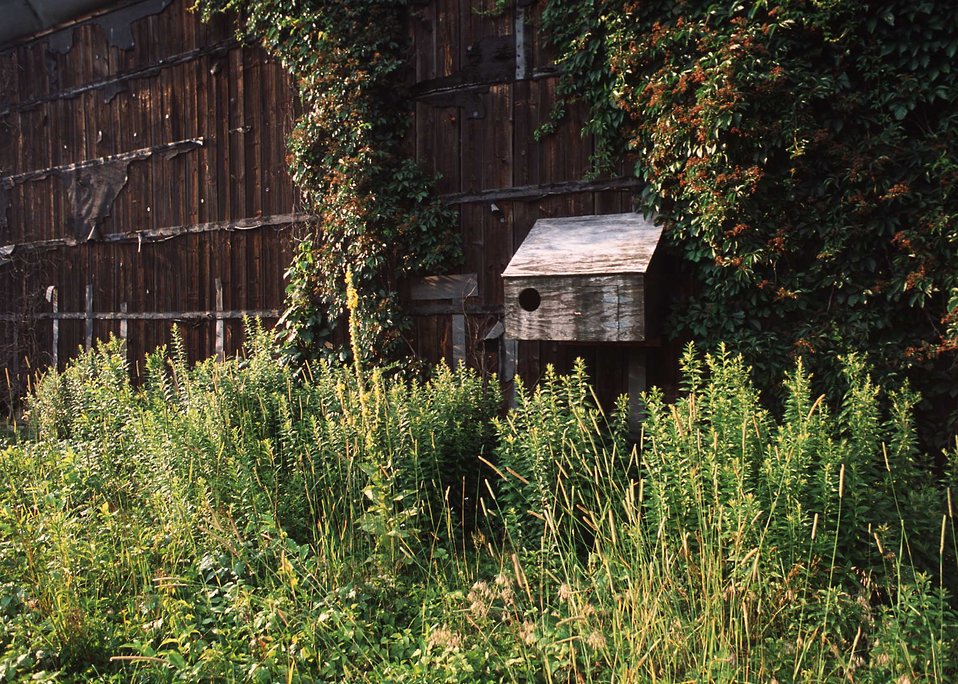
Owl nesting box on an abandoned tobacco barn on the periphery of a warm season grassland habitat restoration project in Hartford County.